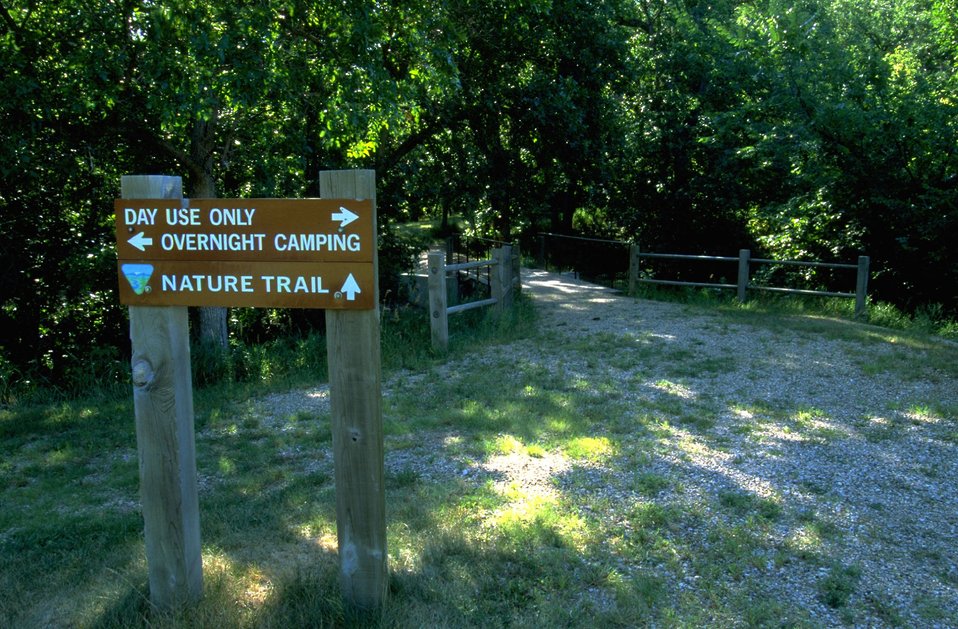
Signs at Alkali Creek at the south end of Fort Meade